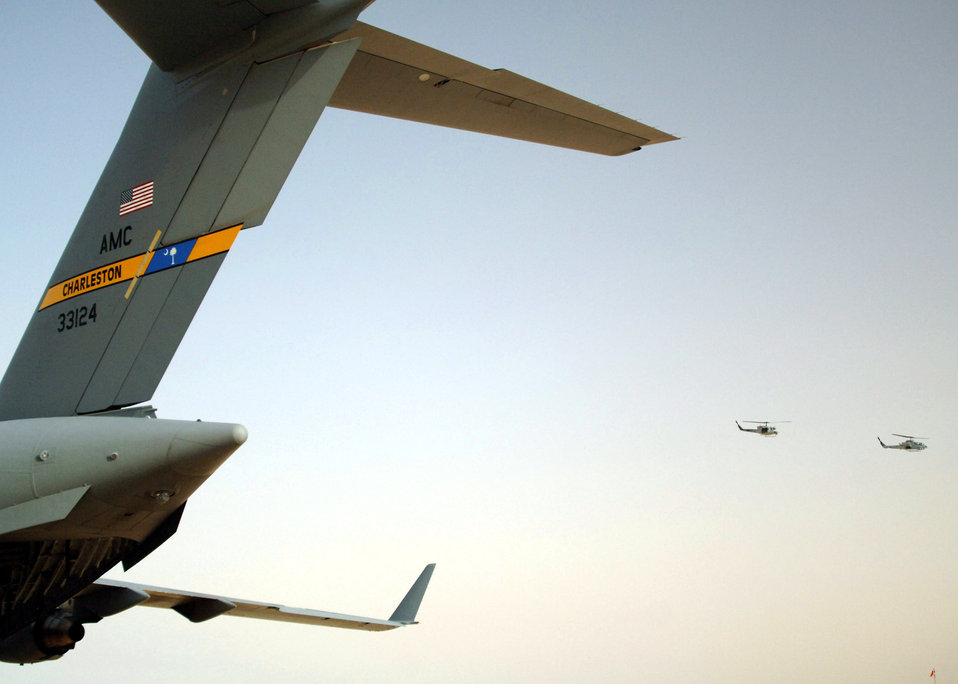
Aerial porters saving countless lives moving air cargo in Iraq

A C-17 Globemaster III from Charleston Air Force Base, S.C., is readied for cargo loading while two Marine AH-64 Cobra attack helicopters pass over April 21 at Al Asad Air Base, Iraq. Since January, Airmen from the 438th Aerial Port Flight at Al Asad have processed more than 32,000 passengers, 15,528 tons of cargo and more than 2,600 aircraft, keeping nearly 12,000 American servicemembers off the roads in convoys.